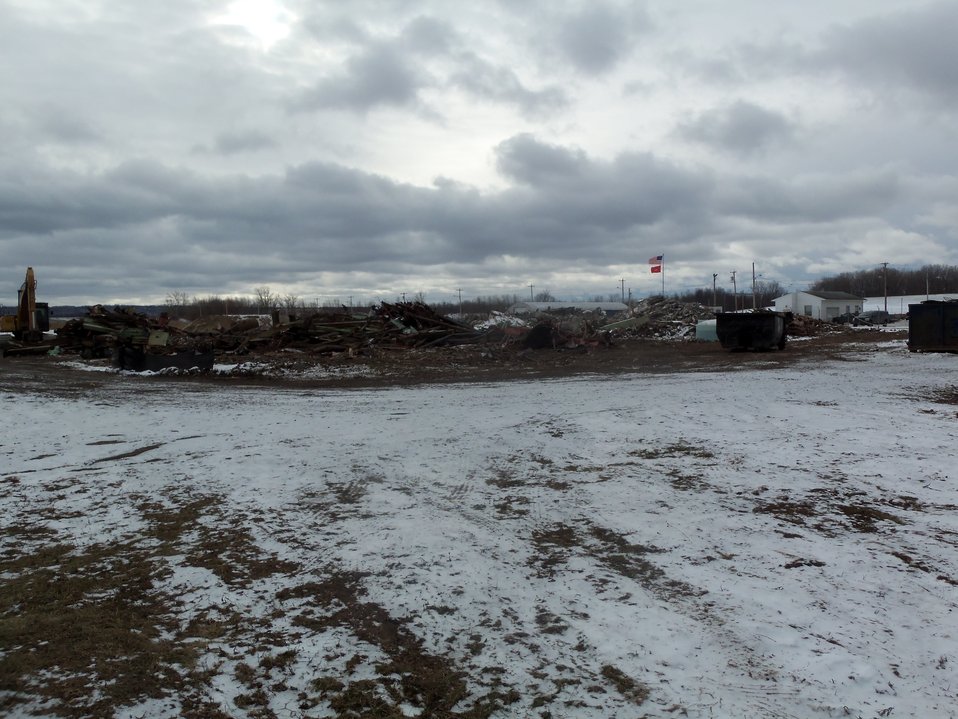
BLDG 401 REMAINING DEBRIS

Activities from the Niagara Falls Storage Site, which is associated with the former Lake Ontario Ordnance Works. Formerly Utilized Sites Remedial Action Program (FUSRAP), a program initiated in 1974 to identify, investigate and clean up or control sites that were part of the Nation's early atomic energy and weapons program. Activities at the sites that are eligible for FUSRAP were conducted by Manhattan Engineer District (MED) or the Atomic Energy Commission (AEC), both predecessors of the Department of Energy (DOE). The U.S. Army Corps of Engineers was assigned management of FUSRAP by Congress in 1997.